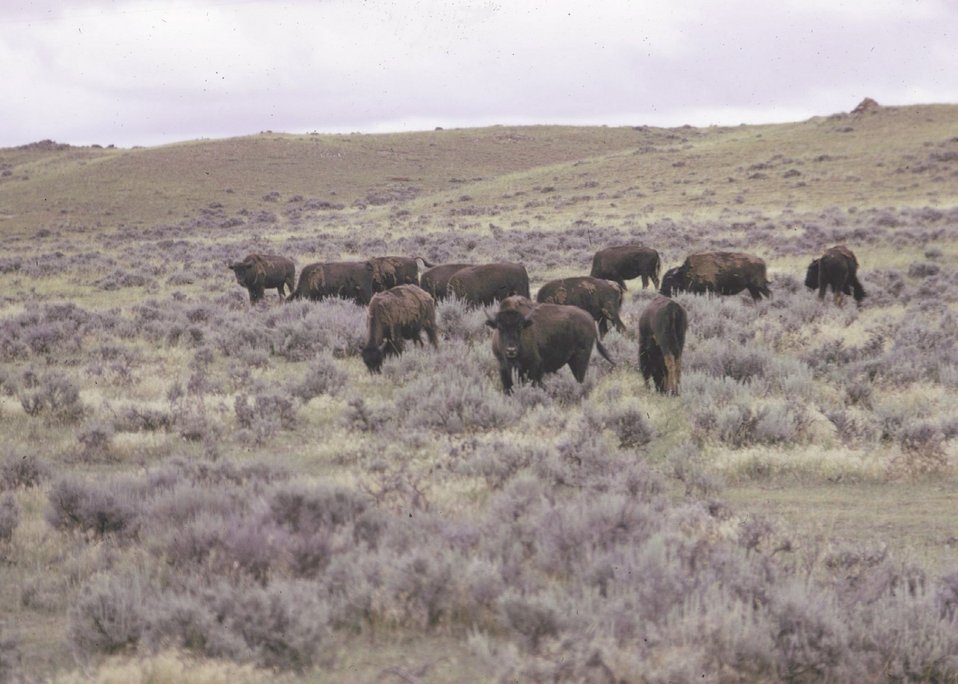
A herd of buffalo on a prairie north of Reno Junction.